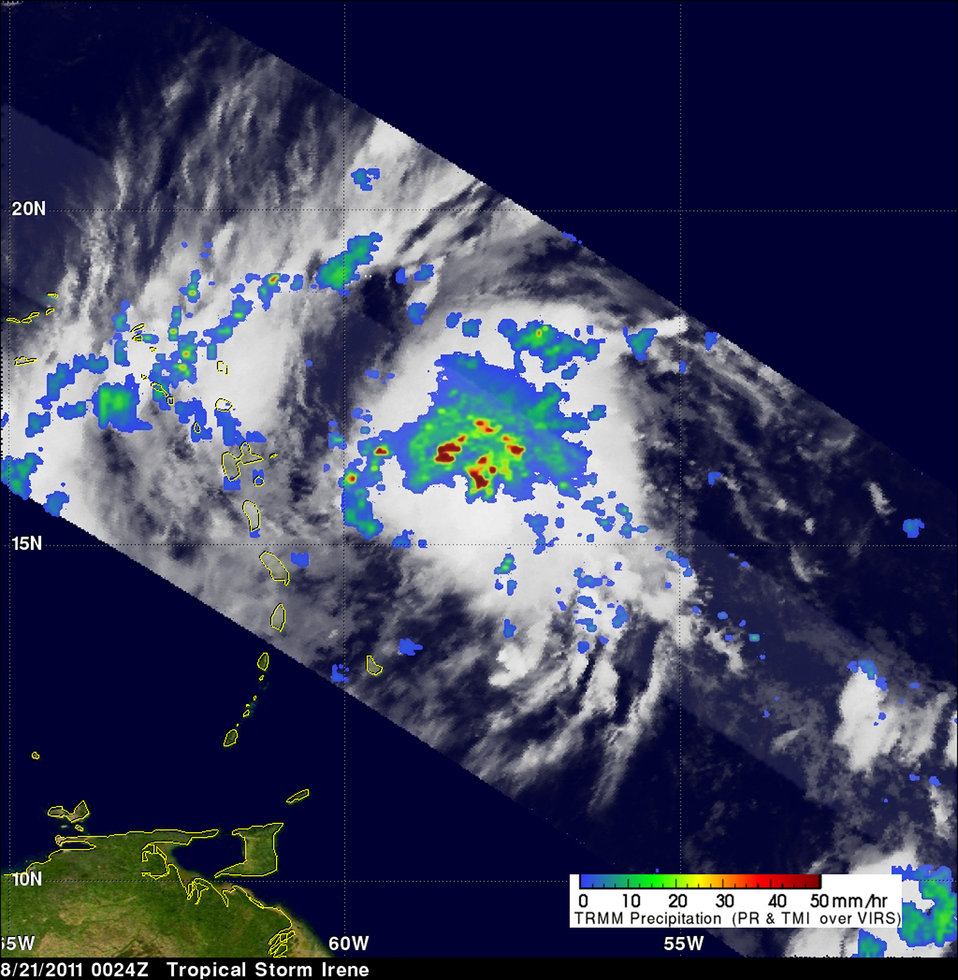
National Aeronautics and Space Administration, (NASA): Hurricanes/Tropical Cyclones